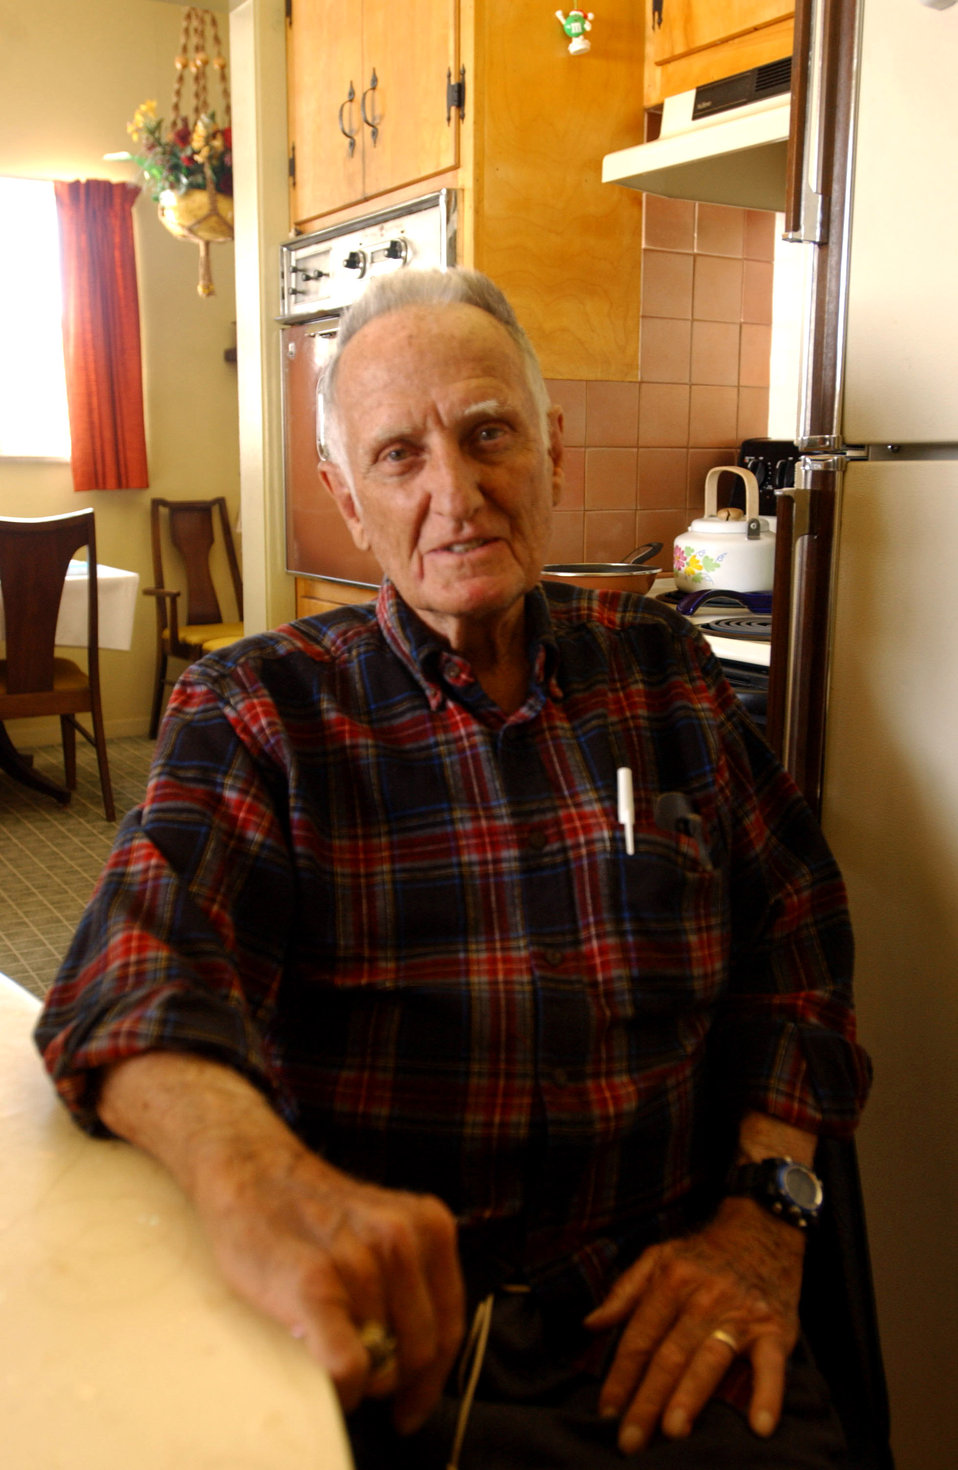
Charter members reflect on Air Guard's first 60 years

Harry Emily, 90, was one of the charter members of the Colorado Air National Guard. The retired technical sergeant was in the 120th Tactical Fighter Squadron, which was the nation's first federally recognized Air Guard unit 60 years ago.